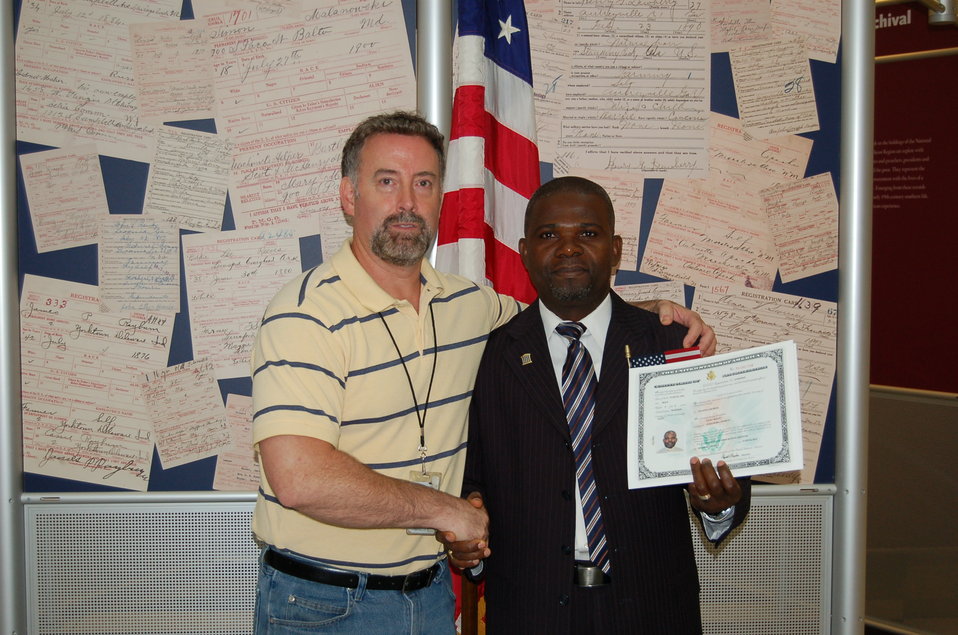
New Citizens